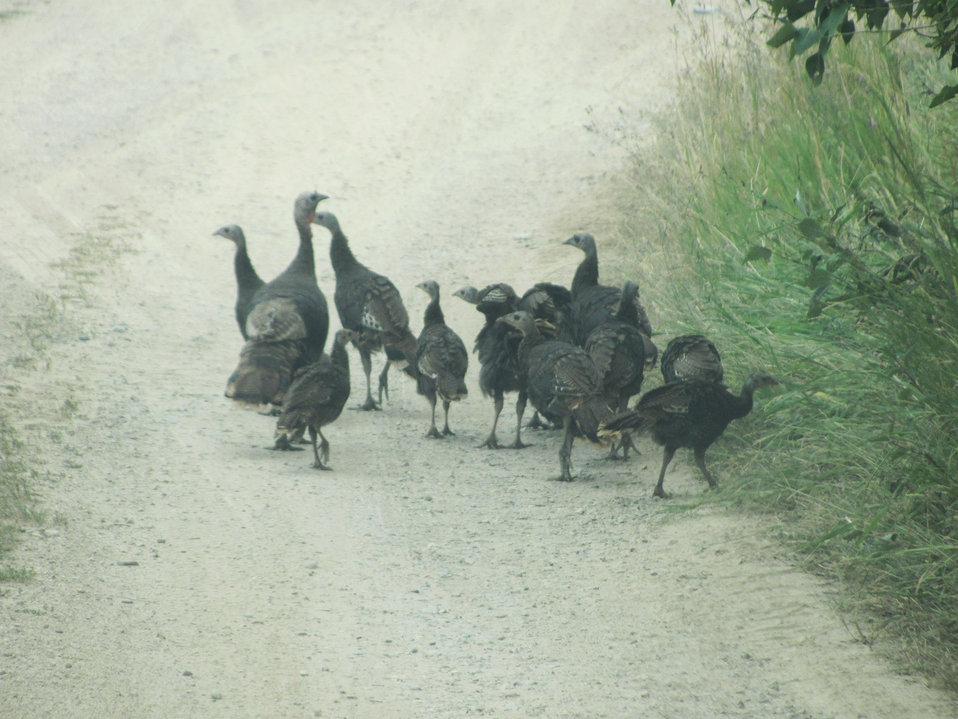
Wild Turkeys are temporarily displaced by the fire activity at the Lolo Creek Fire. The Lolo Creek Fire in the Lolo National Forest near Lolo, MT began on Aug. 18, 2013 by lightning has consumed approximately 10,892 acres and is 47% contained.